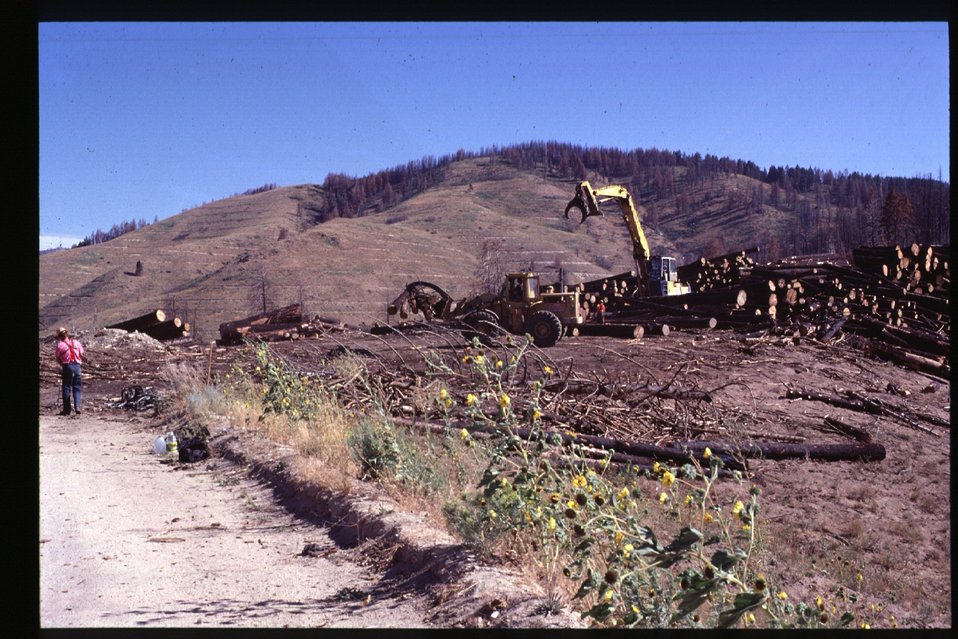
8th Street Fire Four Rivers Field Office LSRD Lower Snake River District